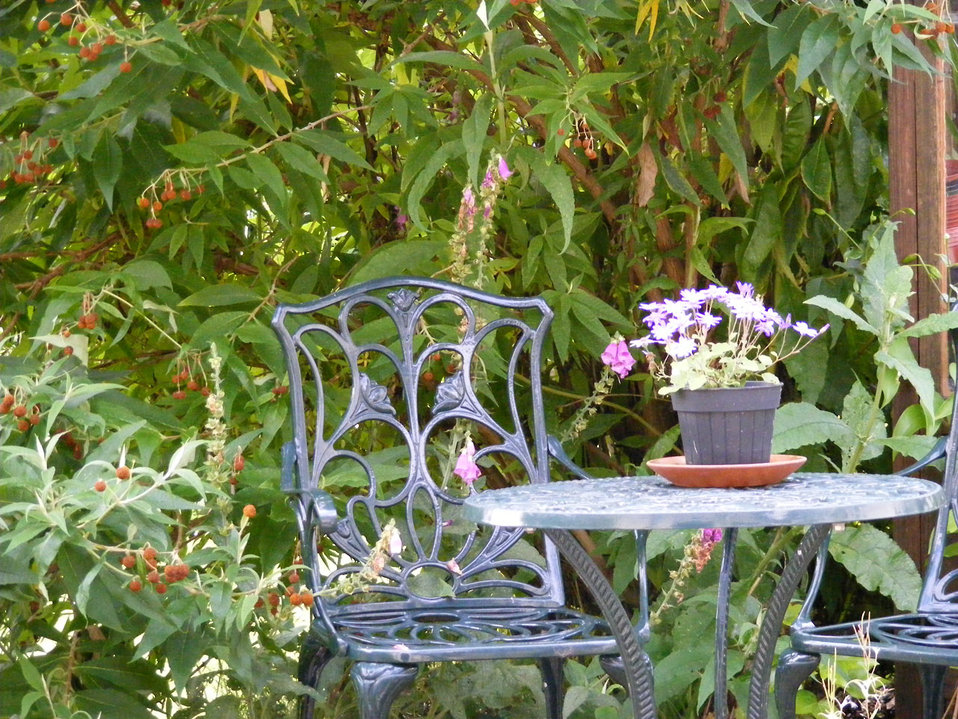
Tranquility

A secluded corner.